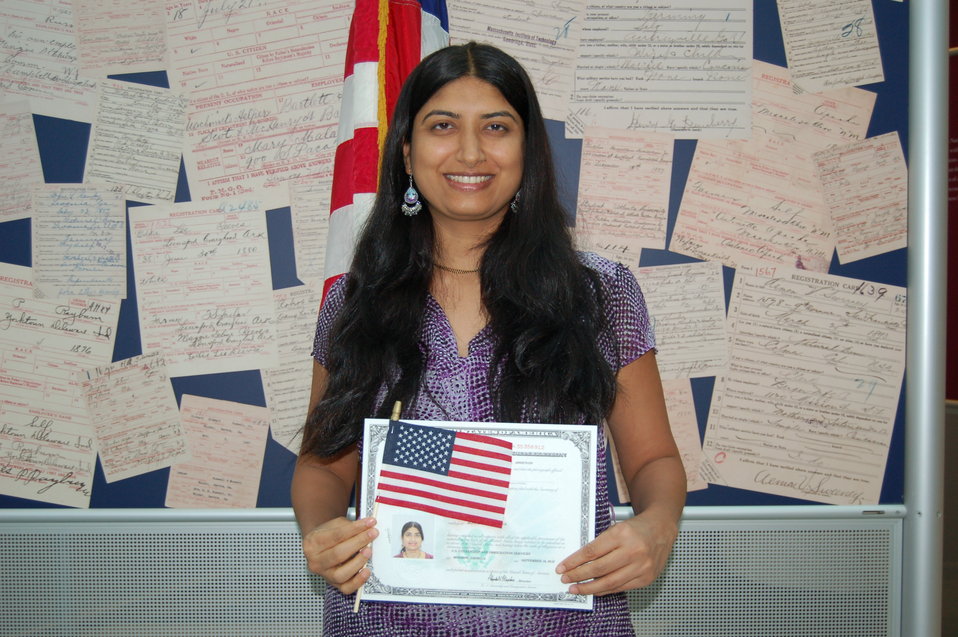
New Citizens